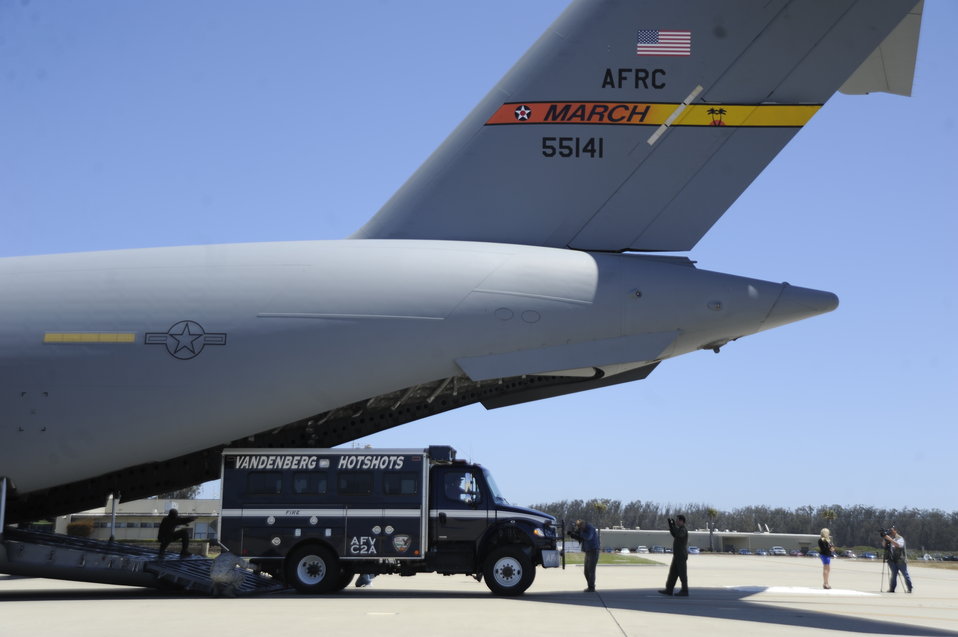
Vandenberg Air Force Base Hot Shots

A Vandenberg Air Force Base Hot Shots vehicle backs into the belly of a C-17 Globemaster III at Vanderberg Air Force Base, Calif., on June 27, 2012. Eighteen members of the Vandenberg Hot Shot crew, along with two crew carrier vehicles, one superintendent support vehicle and one all-terrain vehicle deployed to Colorado to support the wildland fire-fighting efforts. The Globemaster III is assigned to March Air Reserve Base, Calif.